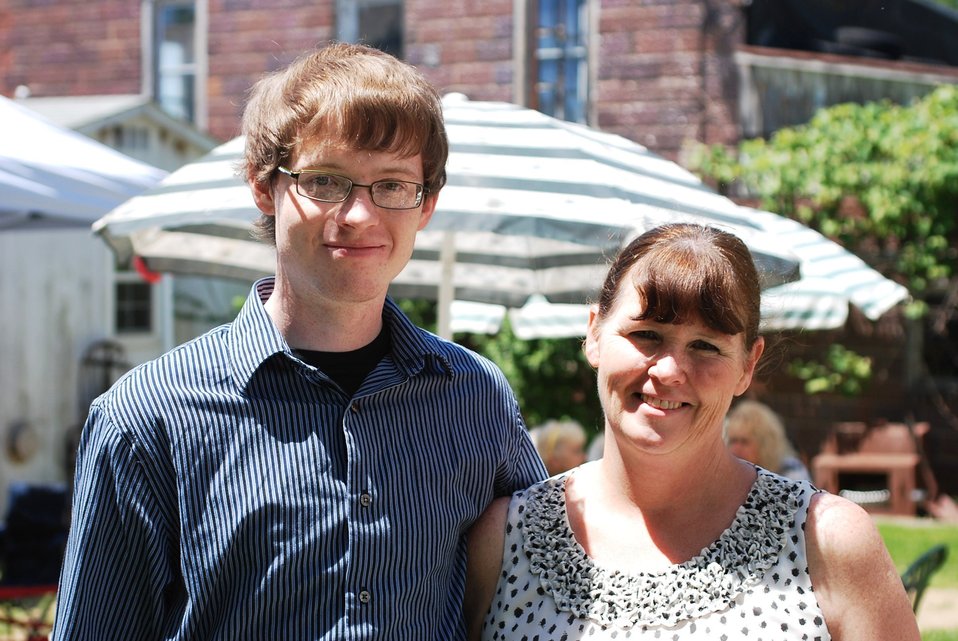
20130604 Stafford Ohio Community Connect Levi Morris mom Becky Morris

Pennsylvania Law School student Levi Morris stands beside his mother Becky. Morris can now continue his education from home thanks to the broadband service provided to his town through U.S. Department of Agriculture (USDA) Rural Development (RD) Community Connect grant.